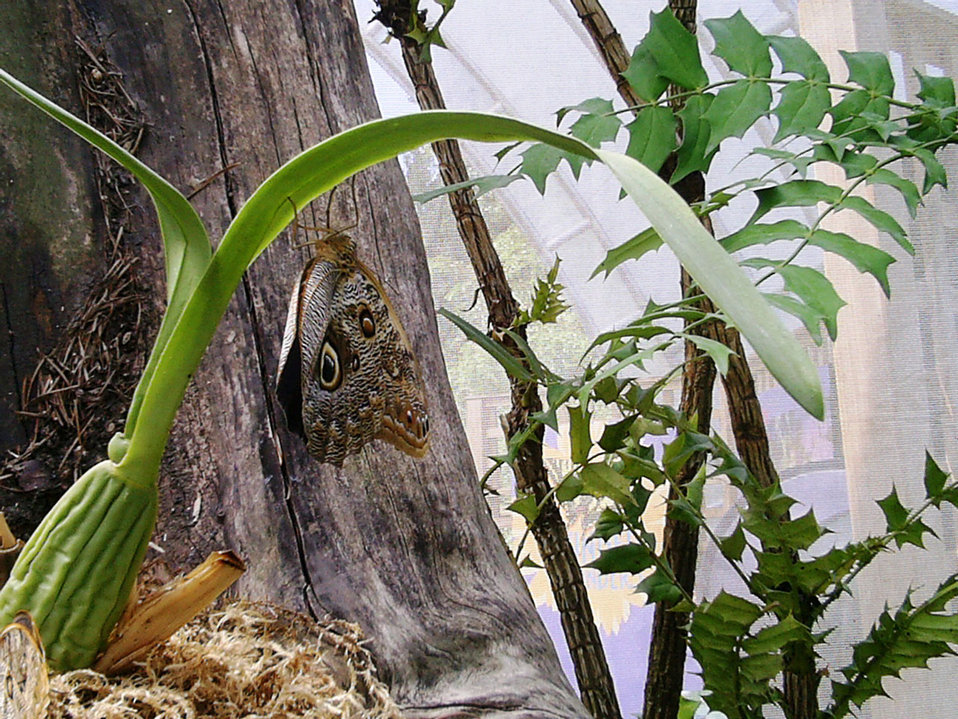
Brown butterfly

A beautiful brown butterfly on a plant stem at the butterfly habitat in florida..